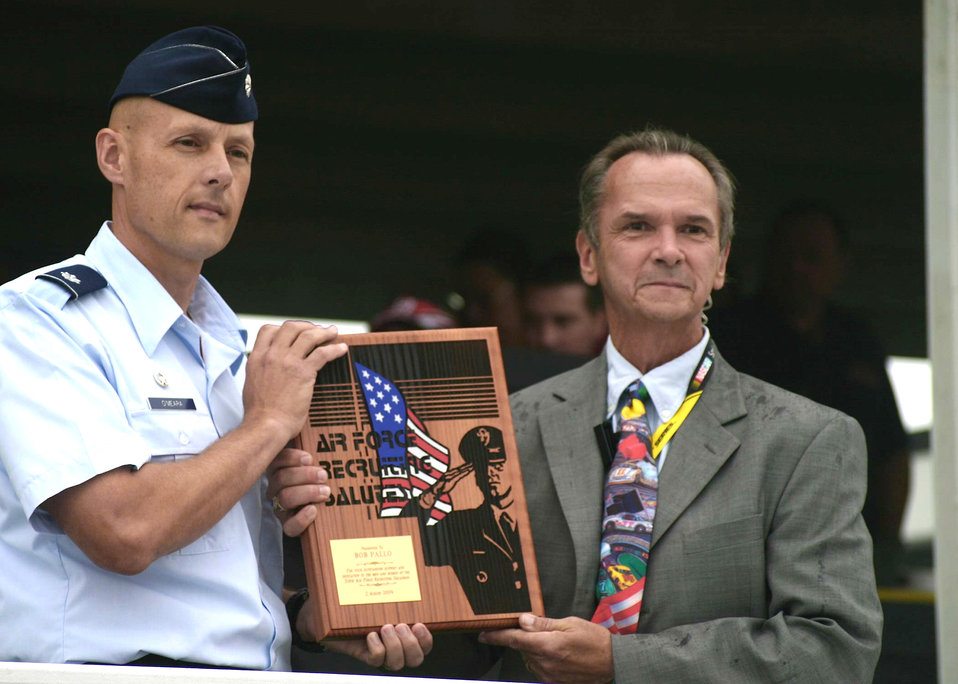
Pennsylvania 500 NASCAR weekend

Lt. Col. Kevin O'Meara, 314th Recruiting Squadron commander, presents the Air Force Recruiting Salutes award to Bob Pallo, Pocono Raceway vice president Aug. 2 as part of Pennsylvania 500 NASCAR pre-race events. Mr. Pallo received the award for his outstanding support and dedication to the Air Force recruiting mission.